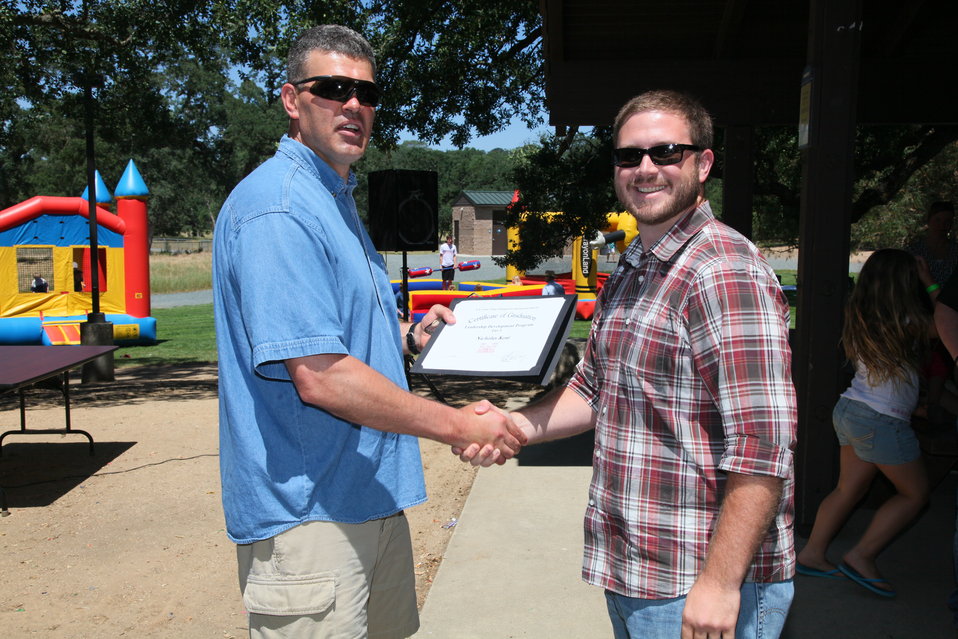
2011 Annual Picnic